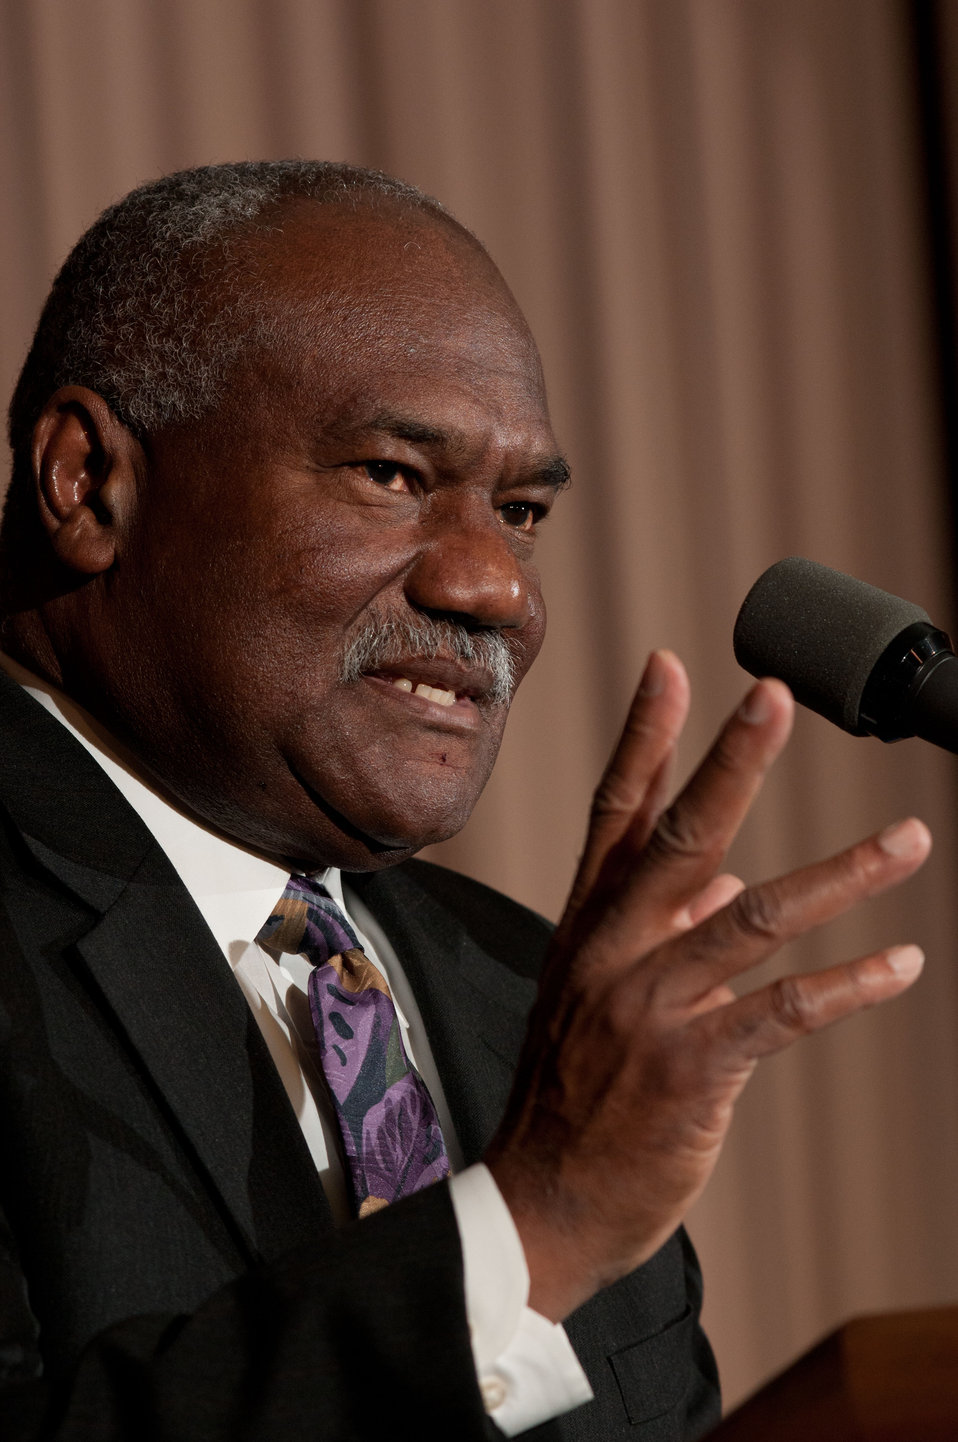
United States Department of Agriculture Assistant Secretary for Administration Pearlie Reed addresses the Work Force Recruitment Program’s (WRP) 'Your Key To Hiring Student Interns and Employees with Disabilities” event hosted by the United States Department of Agriculture (USDA) in the Jefferson Auditorium, Washington, D.C. on Tuesday, February 7, 2012.